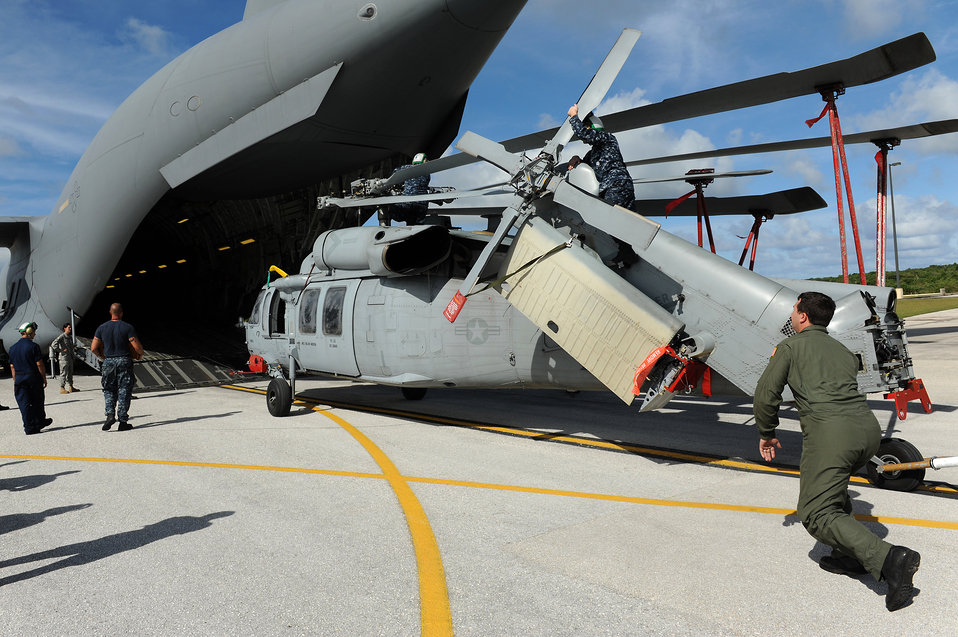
Just a few feet farther

Airmen and Sailors with the 36th Contingency Response Group practice loading a helicopter onto a C-17 Globemaster III Jan. 13, 2011, at Andersen Air Base, Guam. The Globemaster's aircrew from the 535th Airlift Squadron at Joint Base Pearl Harbor-Hickam, Hawaii, also trained while visiting Guam by airdropping paratroopers and supplies.